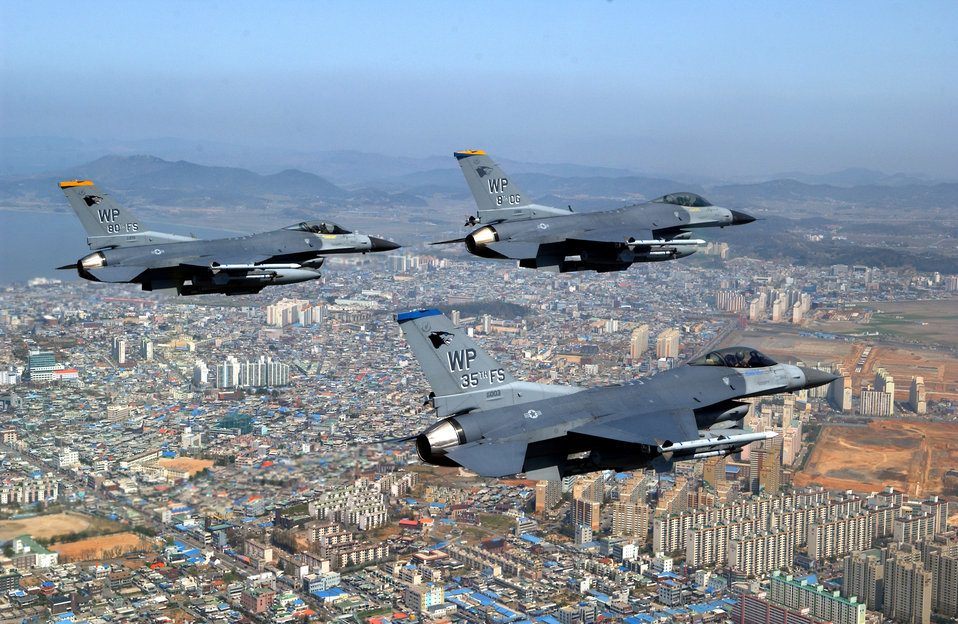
Falcons soar over South Korea

A formation of F-16 Fighting Falcons from the 8th Fighter Wing at Kunsan Air Base, South Korea, flies in close formation near the base on Friday, April 28, 2006. The formation was led by Col. Eric Best, 8th Operations Group commander.